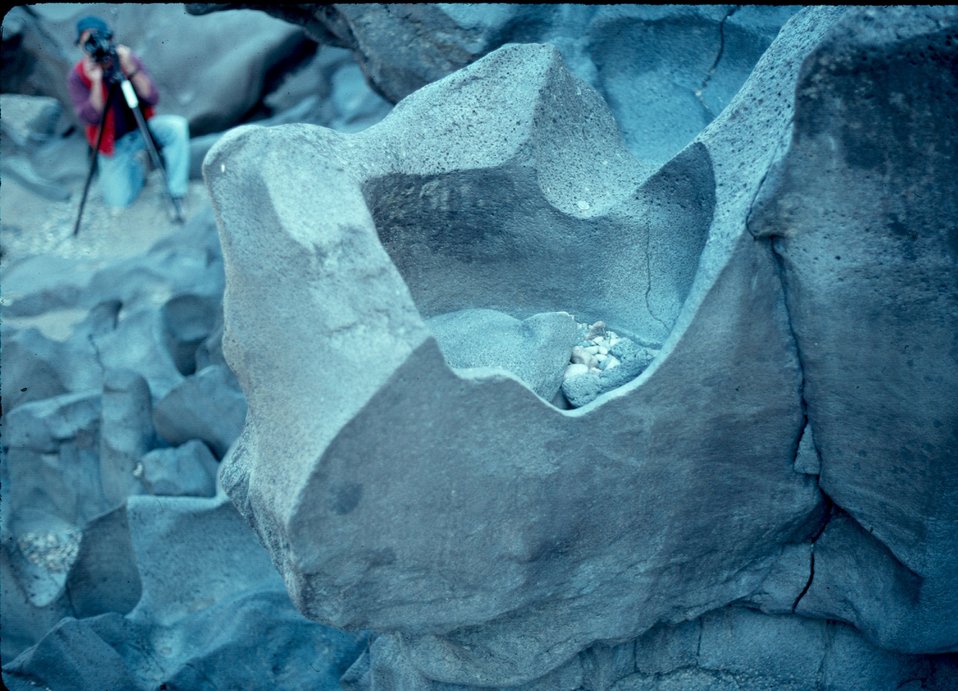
Pothole Shoshone Field Office USRD Upper Snake River District